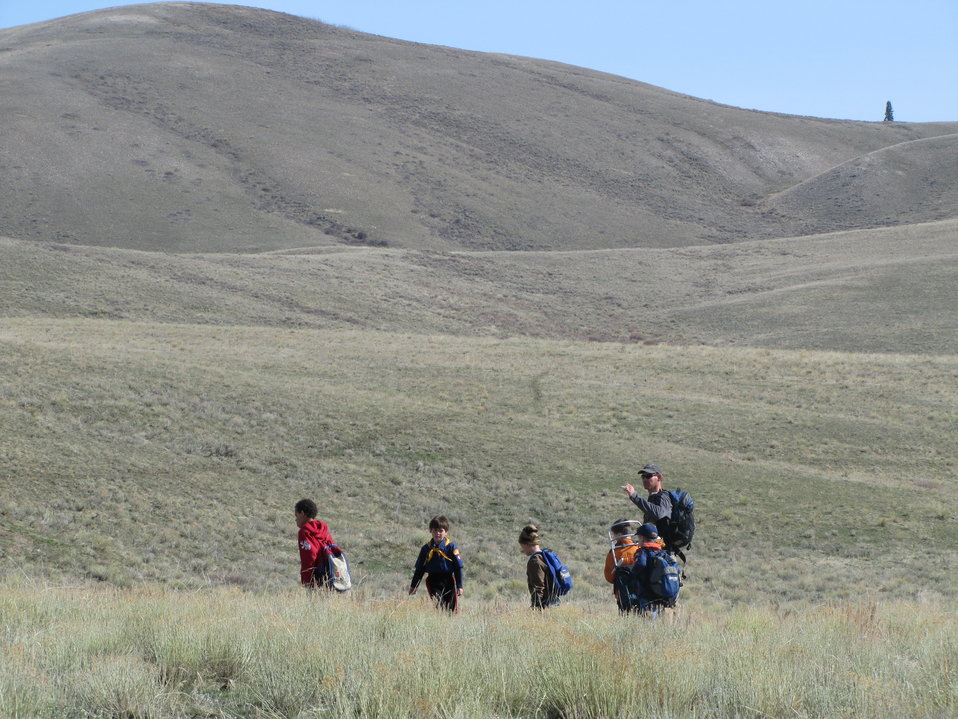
Heading Out for a Day of Hiking and Searching

Through an annual special use permit, the Jackson District Boy Scouts are allowed to help National Elk Refuge staff pick up antlers one Saturday each year, making a final sweep for antlers to sell at the annual auction. The special use permit lists certain restrictions for the activity. Most importantly, it states that the Boy Scouts cannot keep any of the collected antlers.

Here, a group of Jackson District Boy Scouts head out with their leader in search of antlers in the National Elk Refuge's McBride management area.